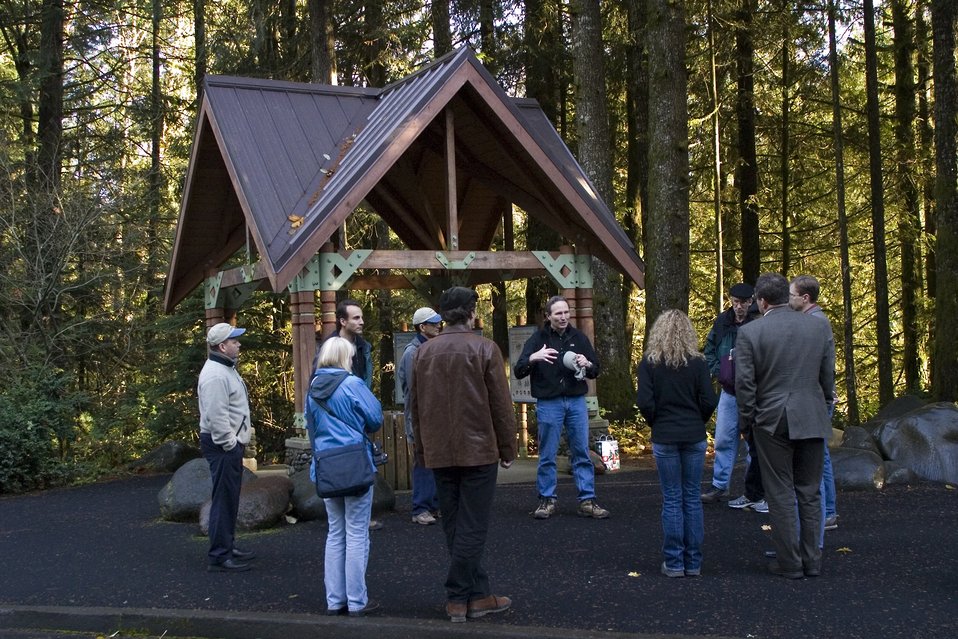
Dale Waddell, Executive Director of Wolftree, breifs a Wild Salmon Center tour group about the Cascade Stream Watch and the partnerships between the U.S. Forest Service, the Bureau of Land Management, Wolftree, and other private enterprise partners in supporting wild salmon environmental education.